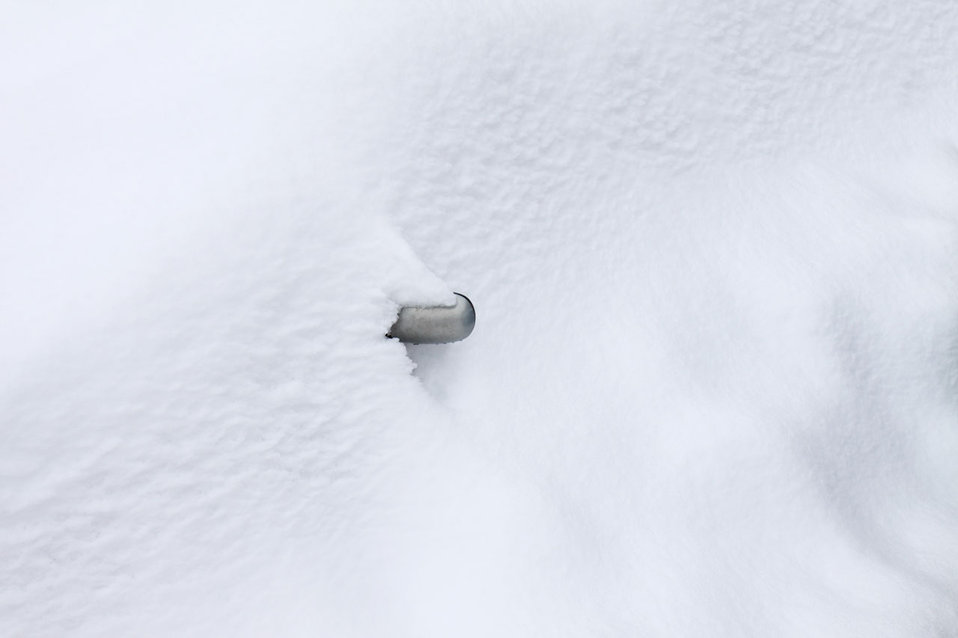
Snow covered car

A pile of snow with a wing mirror.